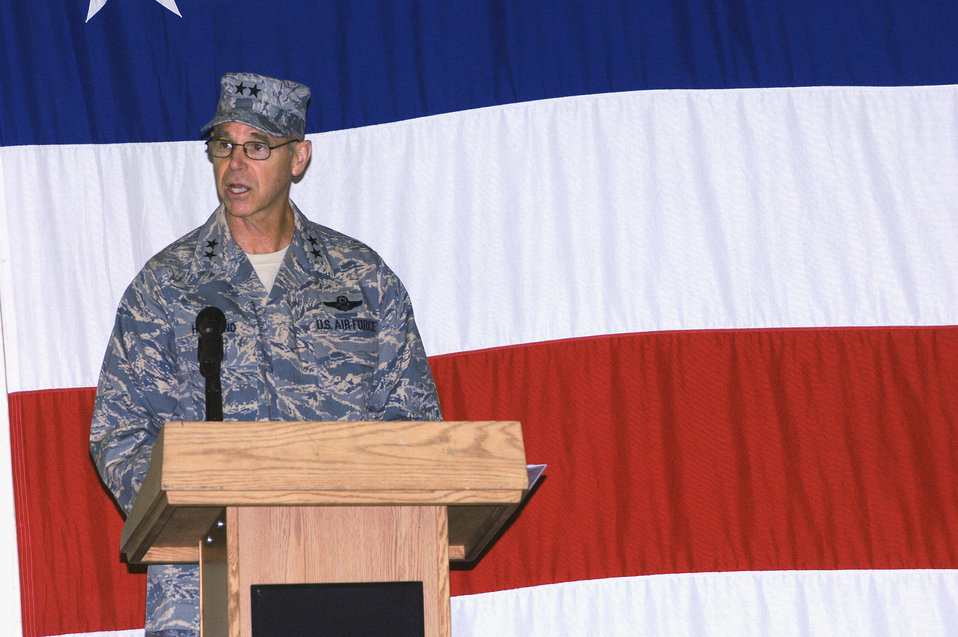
Air Force activates first Air Ground Operations Wing

Maj. Gen. William Holland speaks during the activation ceremony of the 93rd Air Ground Operations Wing here Jan. 25. The wing, a first for the Air Force, brings a new level of support to specialized battlefield Airmen, including tactical air control-party, battlefield weather members from the 3rd and 18th Air Support Operations Groups and security forces Airmen from Moody's 820th Security Forces Group. General Holland is the 9th Air Force vice commander and deputy commander of U.S. Central Command Air Forces.